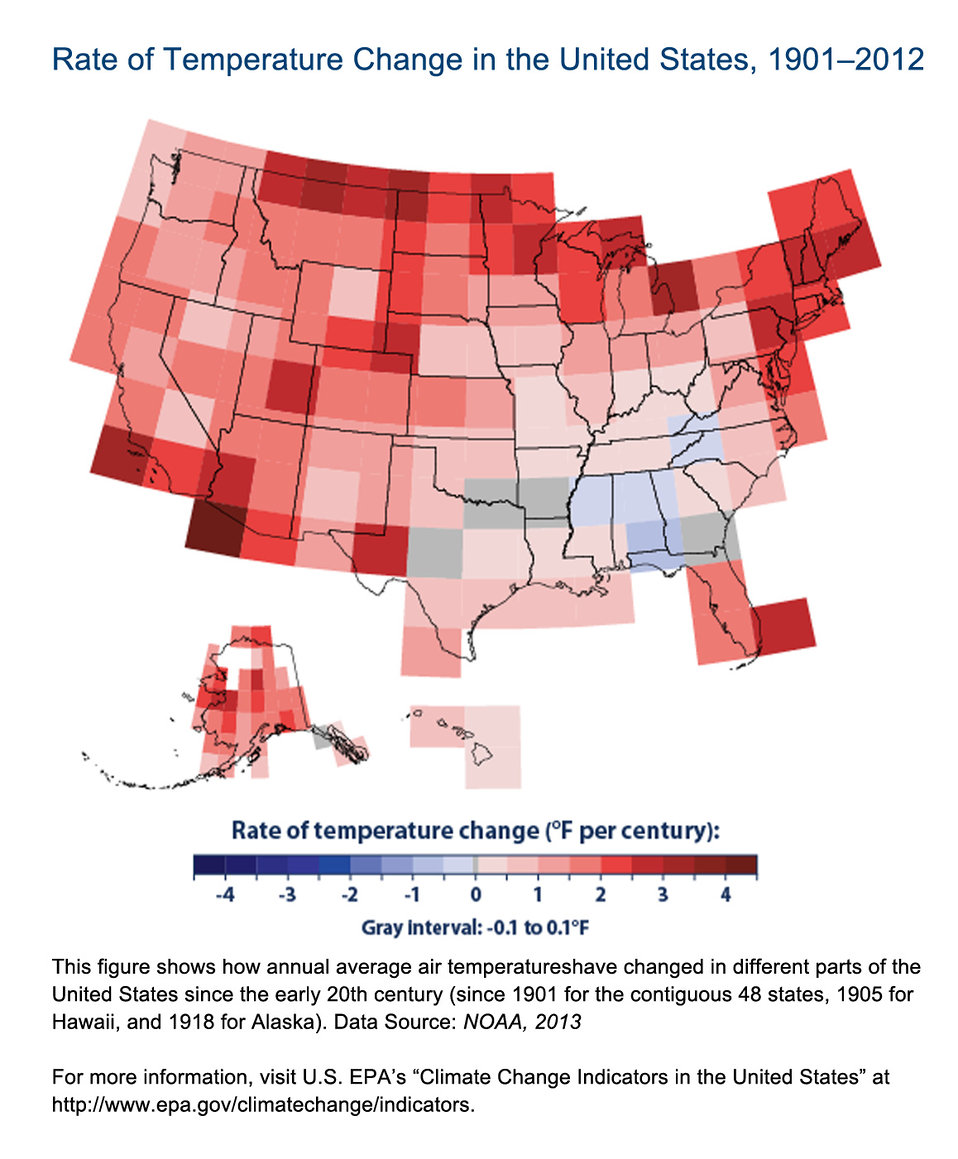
Rate of Change in US

Average temperatures have risen across the contiguous 48 states since 1901.